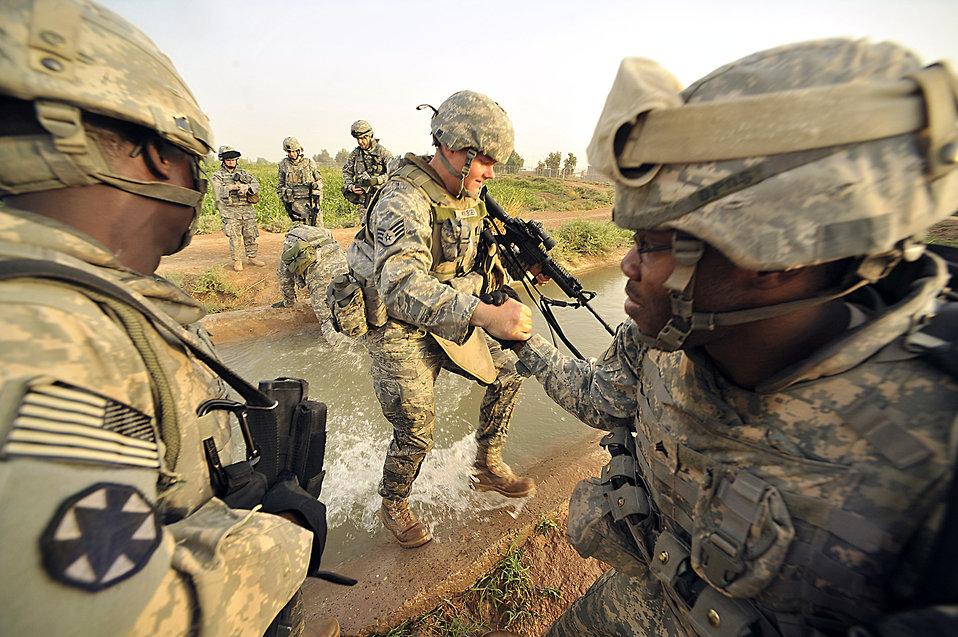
Joint patrol provides Airmen with valuable knowledge

Soldiers help Air Force Staff Sgt. Johnathon Krueger across a irrigation canal outside Joint Base Balad, Iraq, during Operation Lewis and Clark Sept. 11. Operation Lewis and Clark was a joint patrol in which Air Force security forces Airmen were introduced to Balad's outer perimeter. Since Americans began operating from Balad in 2003, the Army has been responsible for base security. The 332nd Expeditionary Security Forces Group will soon be the largest security forces unit deployed in combat to defend an air base since Vietnam. Sergeant Krueger is assigned to the 332nd Expeditionary Security Forces Squadron.